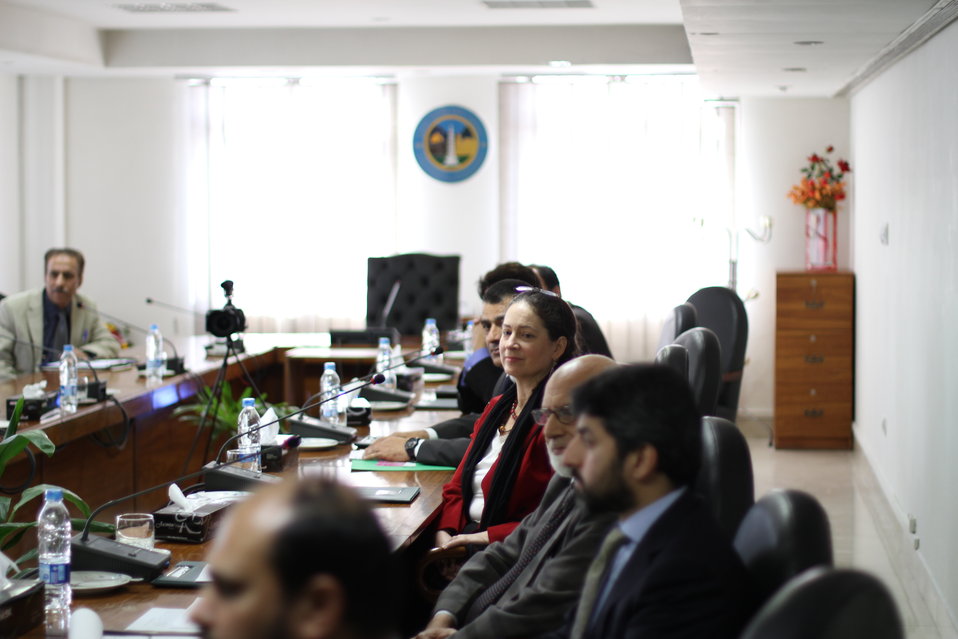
USAID delegation led by Melissa Knight meeting with the officials of Lahore Electric Supply Company (LESCO).

Lahore, February 29, 2012 - A team of USAID officials led by Ms. Melissa Knight, USAID Energy Office Director, visited Lahore Electric Supply Company (LESCO) to discuss the ongoing projects of USAID for LESCO and received briefing from the CEO LESCO, Sherafat Ali Sial about the performance of LESCO. The projects undertaken by USAID Power Distribution Program for LESCO were also discussed and results achieved so far were presented by LESCO. The USAID team along with LESCO officials then visited the Nargis feeder of Allama Iqbal Town where meter checking, fixing and replacement project has been carried out under USAID Power Distribution Program in collaboration with LESCO.